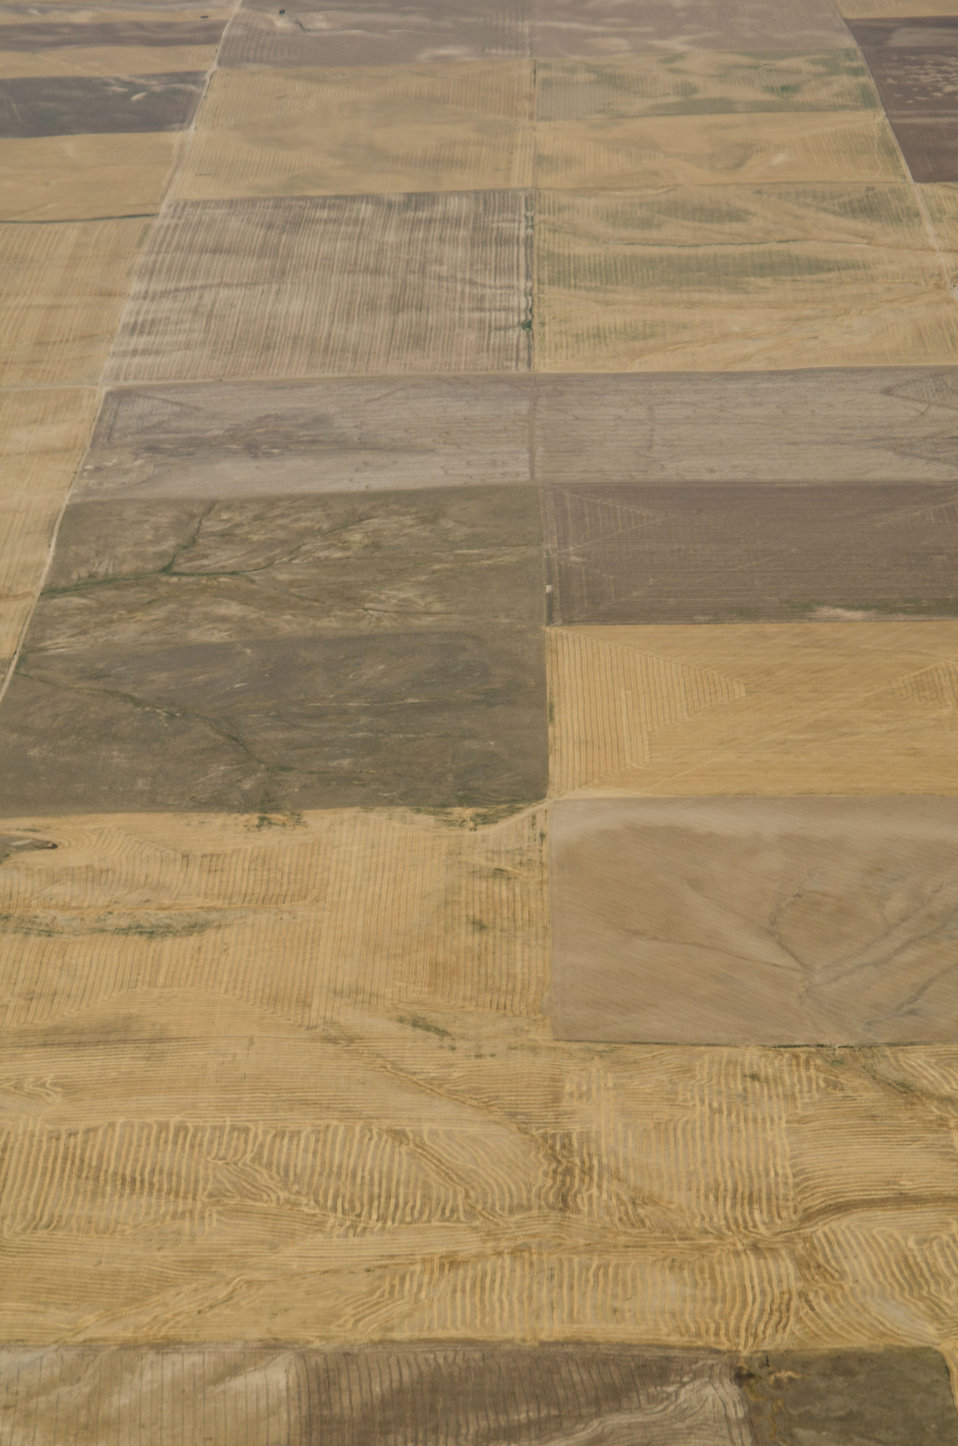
Aerial views of drought affected Colorado farm lands, 89 miles east of Denver, Colorado on Saturday, July 21, 2012. Green areas are irrigated, the yellow areas are dryland wheat crops.